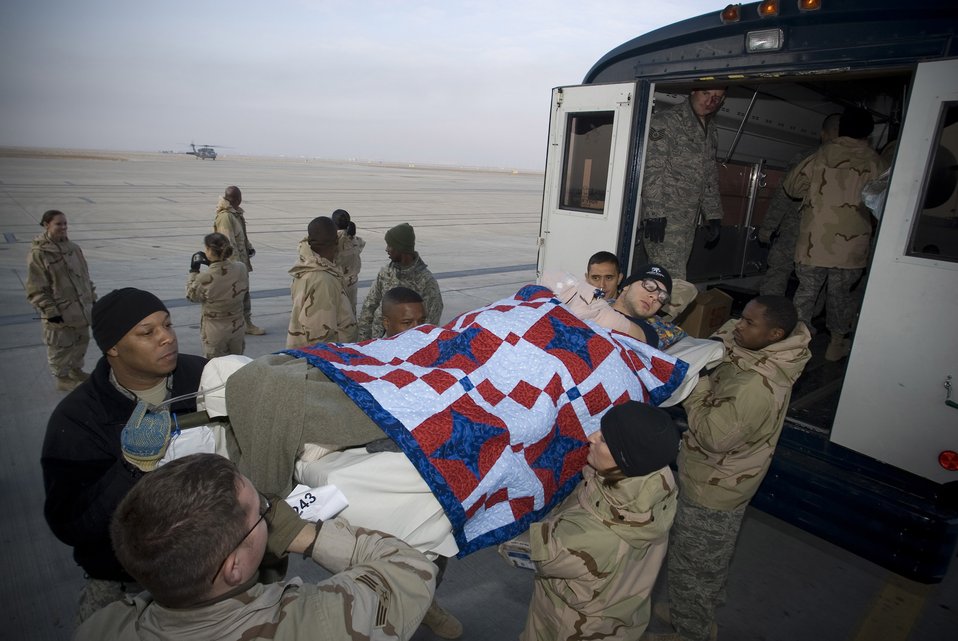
Helping the wounded survive the journey home

Army Pfc. William McClellan, an injured member of the 502nd Infantry Brigade, is unloaded from a Contingency Aeromedical Staging Facility bus on the Balad Air Base, Iraq, flight line Jan. 13 before departing for the Regional Medical Center Landstuhl, Germany. The CASF employs volunteers to assist with the loading and unloading of patients on litters. Private McClellan is deployed from Fort Campbell, Ky.